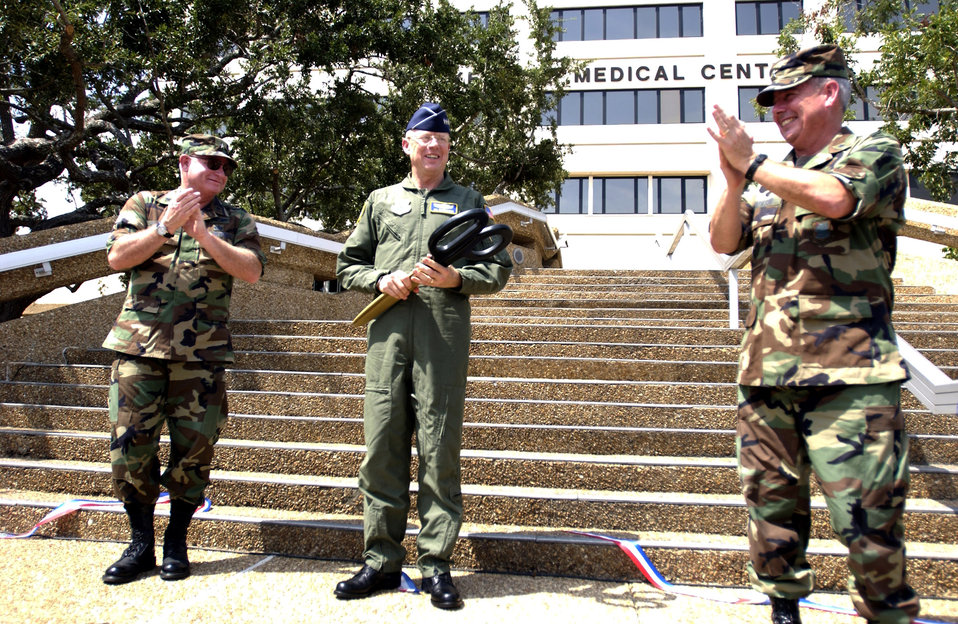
Keesler hospital takes big step forward

Brig. Gen. (Dr.) James Dougherty (right) and Brig. Gen. Paul Capasso (left) applaud after Lt. Gen. (Dr.) James G. Roudebush officially re-opens the Keesler Air Force Base, Miss., medical center Aug. 29. General Roudebush is the Air Force surgeon general. General Capasso is commander of the 81st Training Wing, and General Dougherty is commander of the 81st Medical Group.